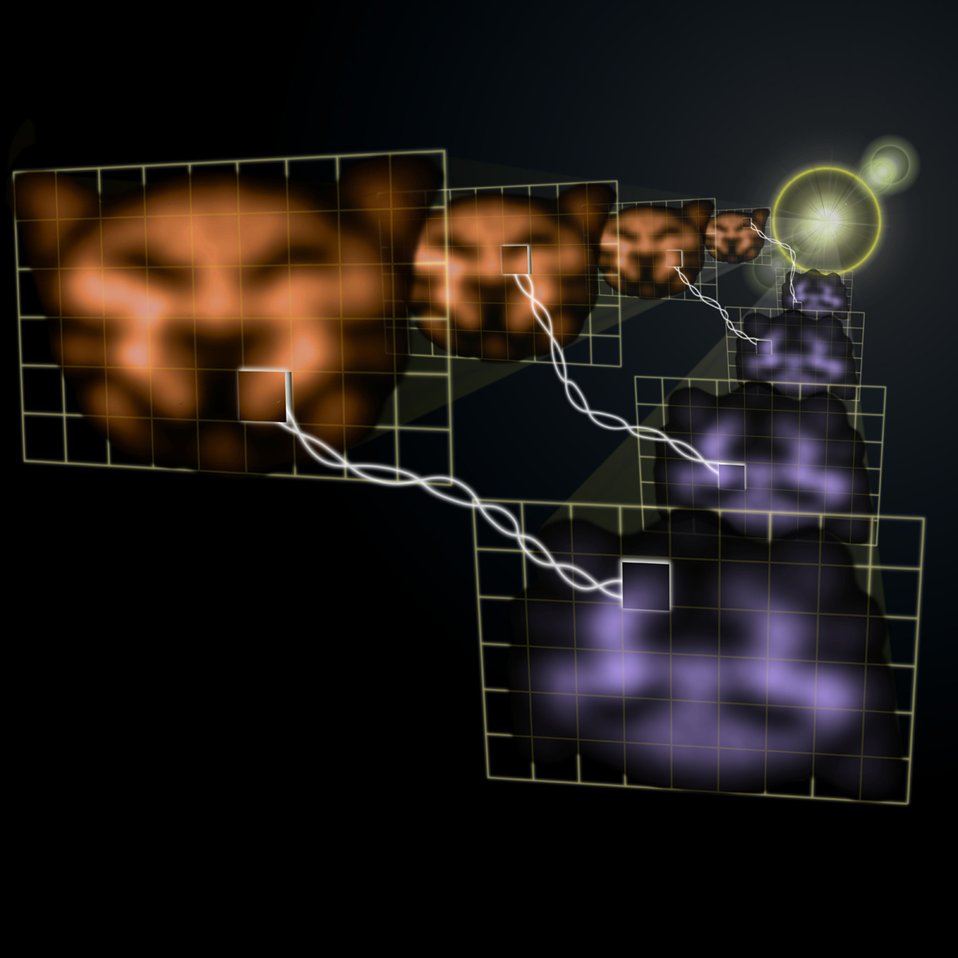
Quantum images

In this photo montage of actual quantum images, two laser beams coming from the bright glare in the distance transmit images of a cat-like face at two slightly different frequencies (represented by the orange and the purple colors). The twisted lines indicate that the seemingly random changes or fluctuations that occur over time in any part of the orange image are strongly interconnected or entangled with the fluctuations of the corresponding part in the purple image. Though false color has been added to the cats faces, they are otherwise actual images obtained in the experiment.